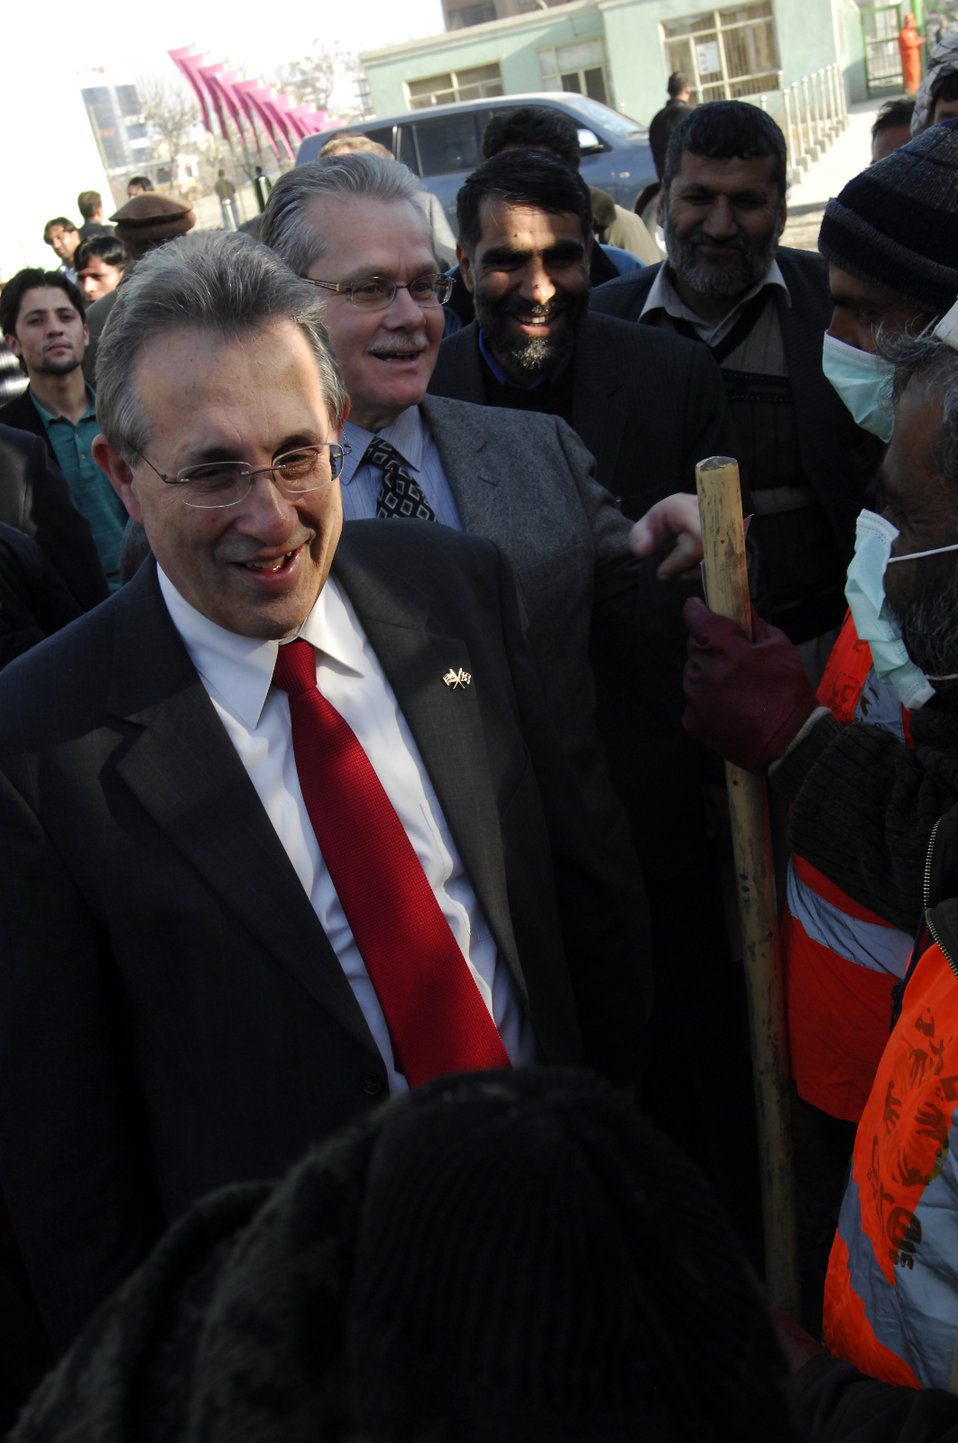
Care88